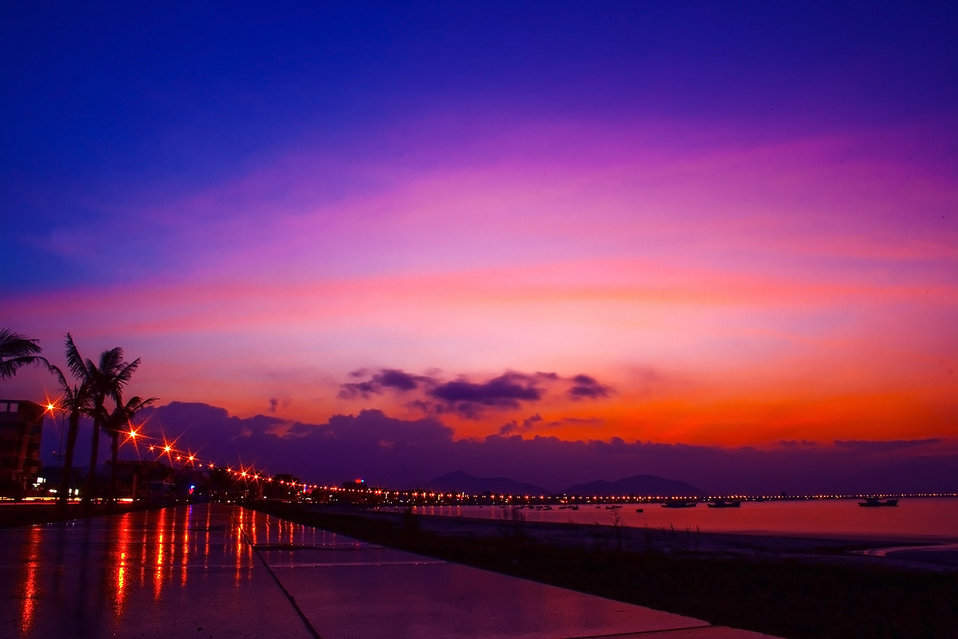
Sunset #10

Sunset on the bay of danang, central vietnam..